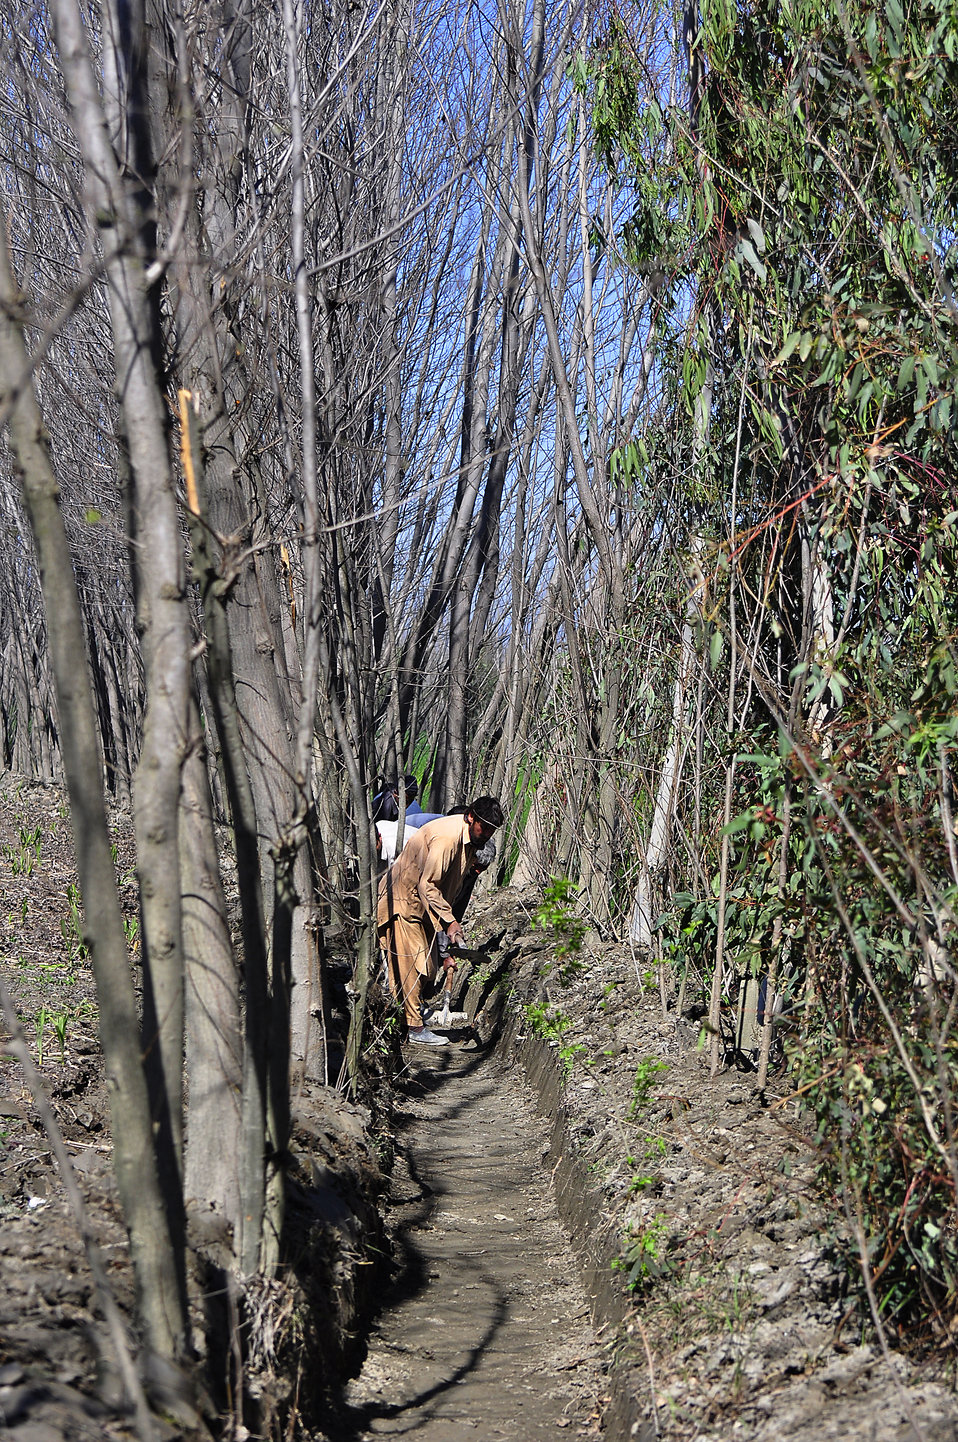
2011 March: USAID's Agricultural Recovery Program in 22 districts of Khyber Pakhtunkhwa, Punjab and Balochistan is an excellent example of the impact US development assistance can have. We have helped more than 500,000 farmers salvage the winter planting season and livestock after the floods. As a result, wheat farmers have nearly doubled their harvests. More than 5 million people have benefited. These photos show progress of the USAID Agricultural Recovery Project in Khyber Pakhtunkhwa.